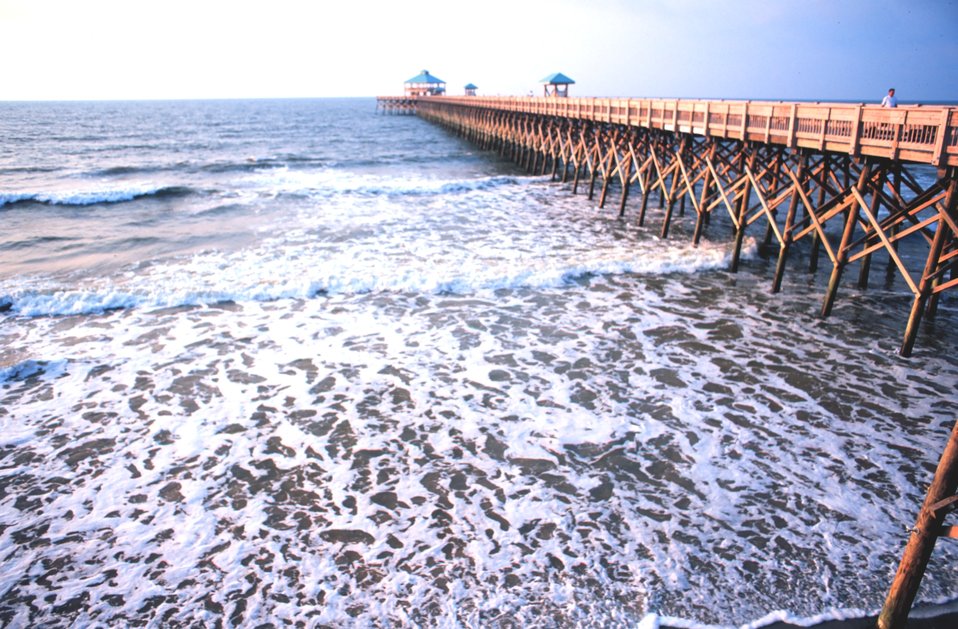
Edwin S. Taylor Fishing Pier